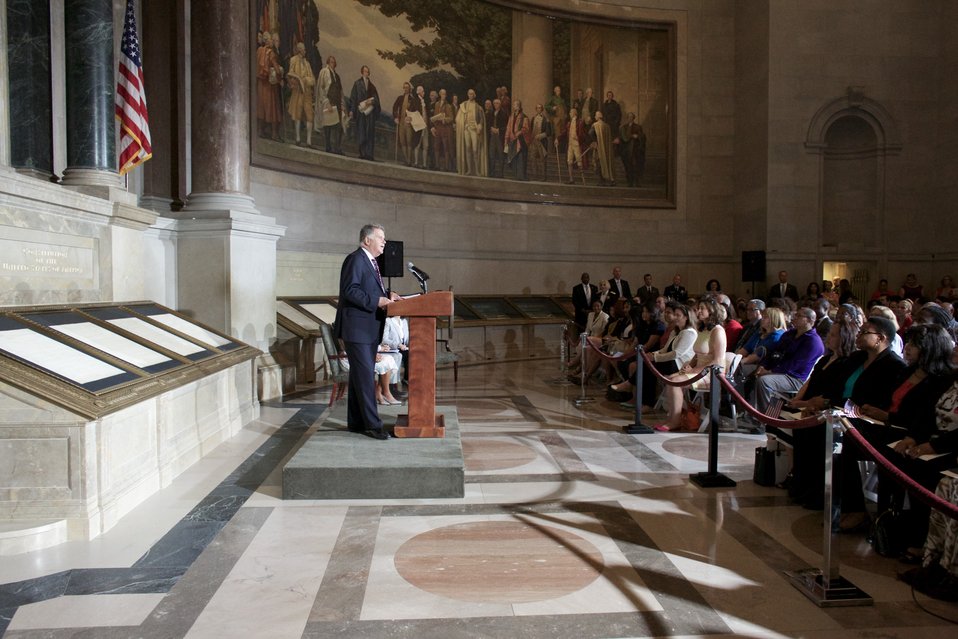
Naturalization Ceremony with Michelle Obama